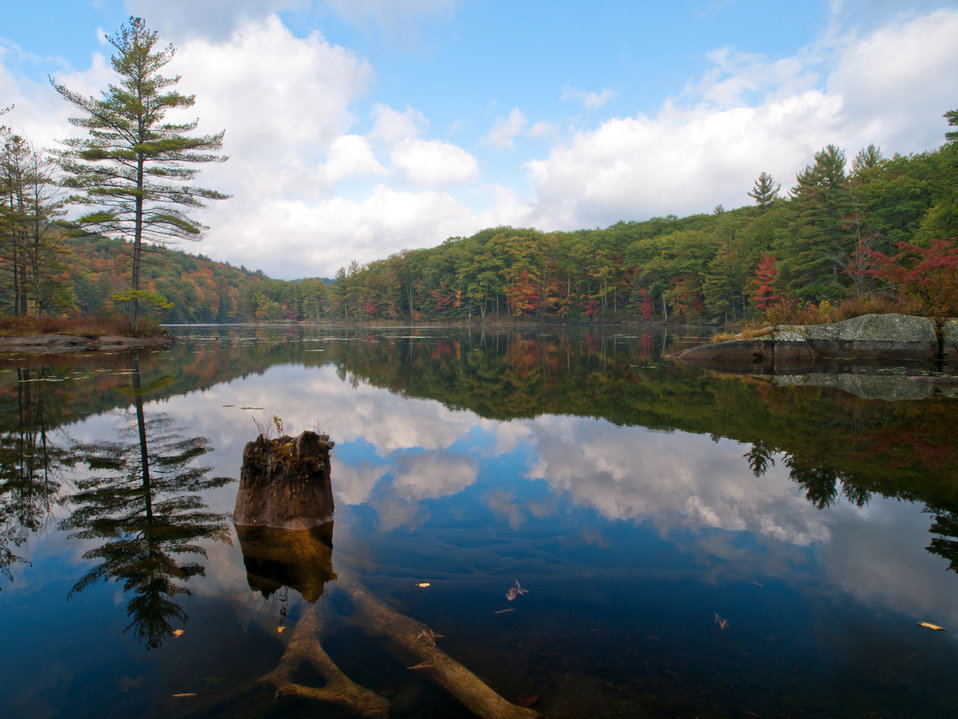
Fall Reflections

Photographed in Colrain, MA.